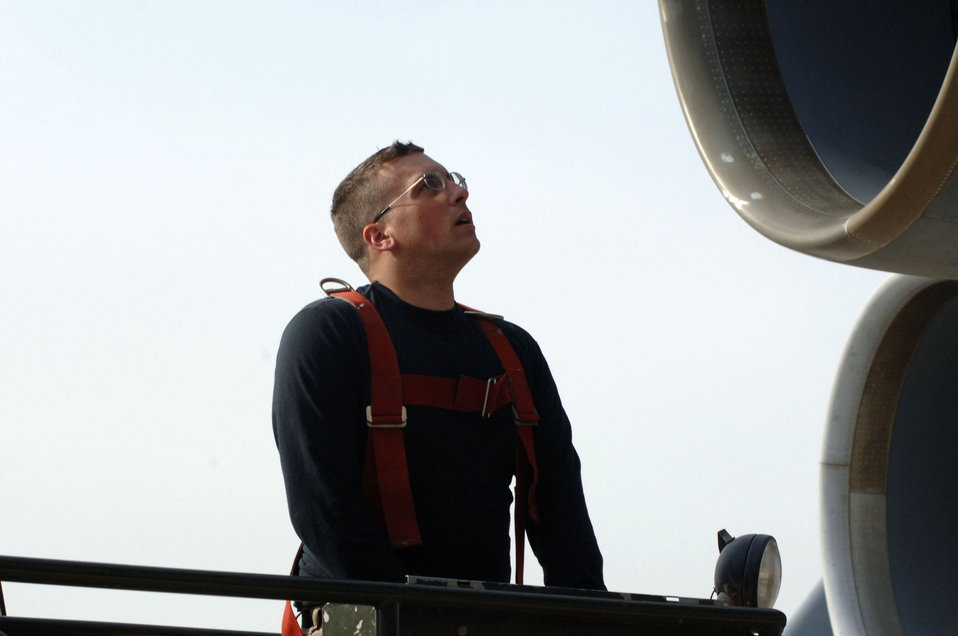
Balad Airmen take on galactic mission

Staff Sgt. Charlton Packham uses a condor lift to access the top of a C-5 Galaxy Jan. 12 at Balad Air Base, Iraq. The C-5 can hold a cargo load of 270,000 pounds, fly 2,150 nautical miles, offload and fly to a second base 500 nautical miles away from the original destination without refueling. Sergeant Packham, a 721st Air Mobility Operations Group Det. 5 maintainer, is deployed from Travis Air Force Base, Calif.